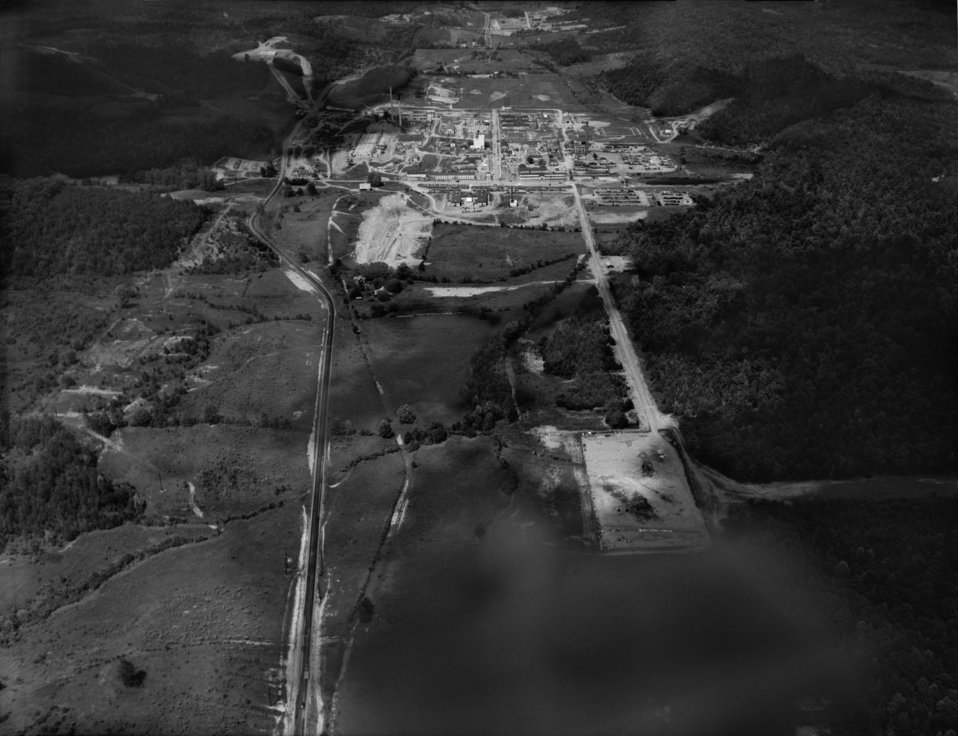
Air View of X-10 ORNL Oak Ridge

005158 DOE photo by Ed Westcott

Air View of X-10 ORNL Oak Ridge Tennessee 7/22/1948